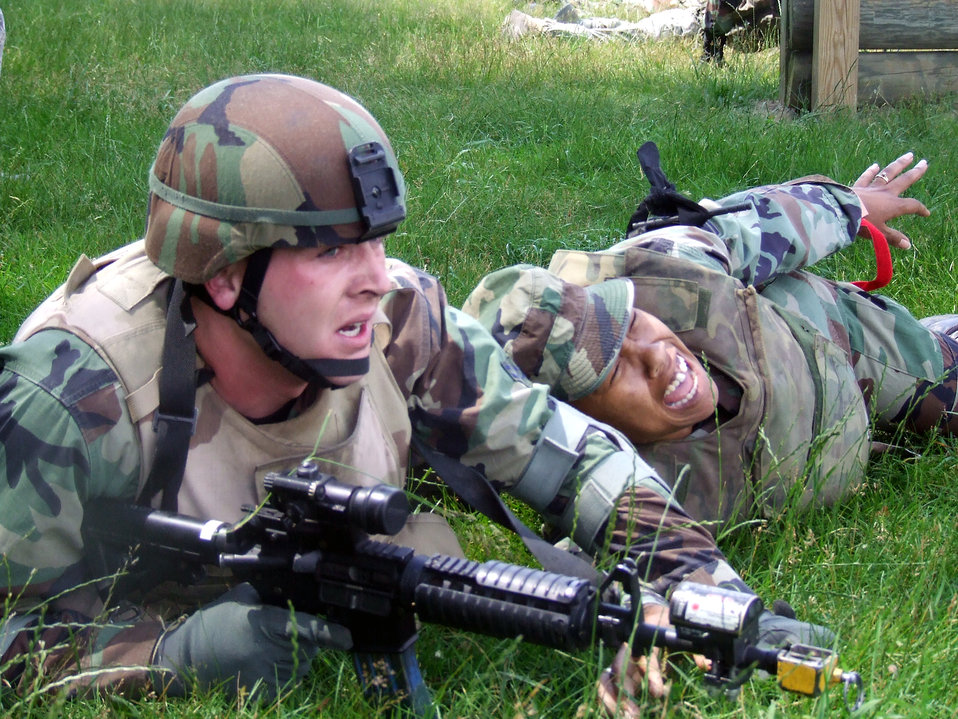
Warriors play

Students in the Air Force Phoenix Warrior Training Course participate in a combat first aid class June 19 at Fort Dix, N.J. The course is taught by the Air Force Expeditionary Center's Expeditionary Operations School and 421st Combat Training Squadron insturctors and prepares security forces Airmen for upcoming deployments.